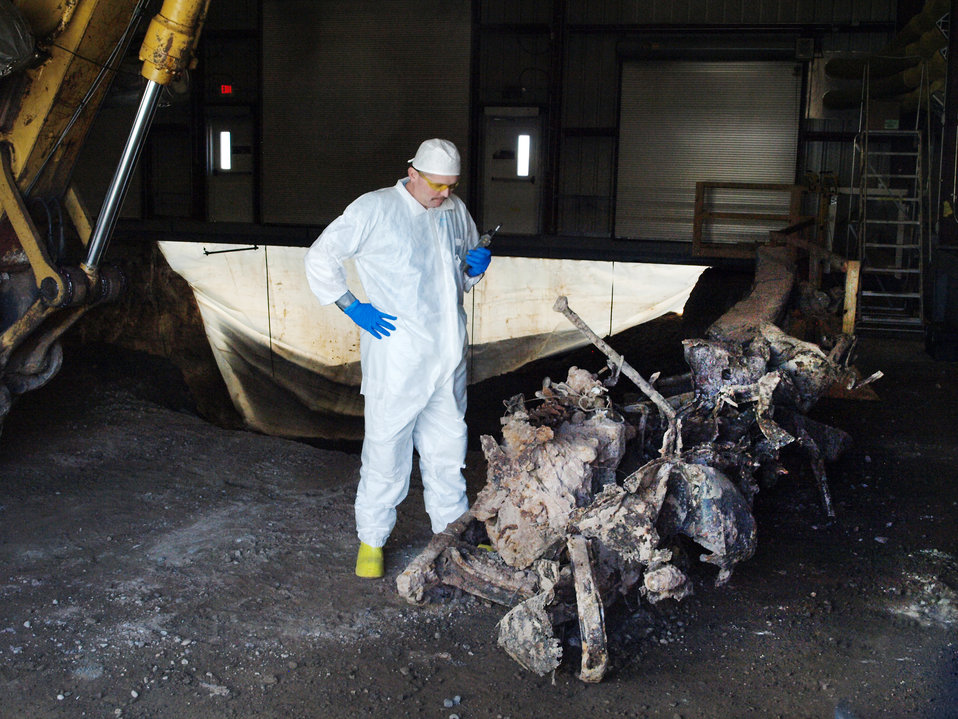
Remnants of 1940s military truck buried in a Manhattan Project-era landfill

A member of a Los Alamos National Laboratory excavation crew inspects the remnants of a 1940s military truck unearthed at the Material Disposal Area B cleanup site.

The truck was unearthed inside a sealed building where digging is taking place at Material Disposal Area B (MDA-B), the Lab’s first hazardous and radioactive waste landfill.
MDA-B was used from 1944 to 1948. The rusting hulk is believed to be a Chevrolet military truck. It’s barely recognizable, but a fender, an inline six-cylinder engine block, a steering column, and part of the cab are visible.